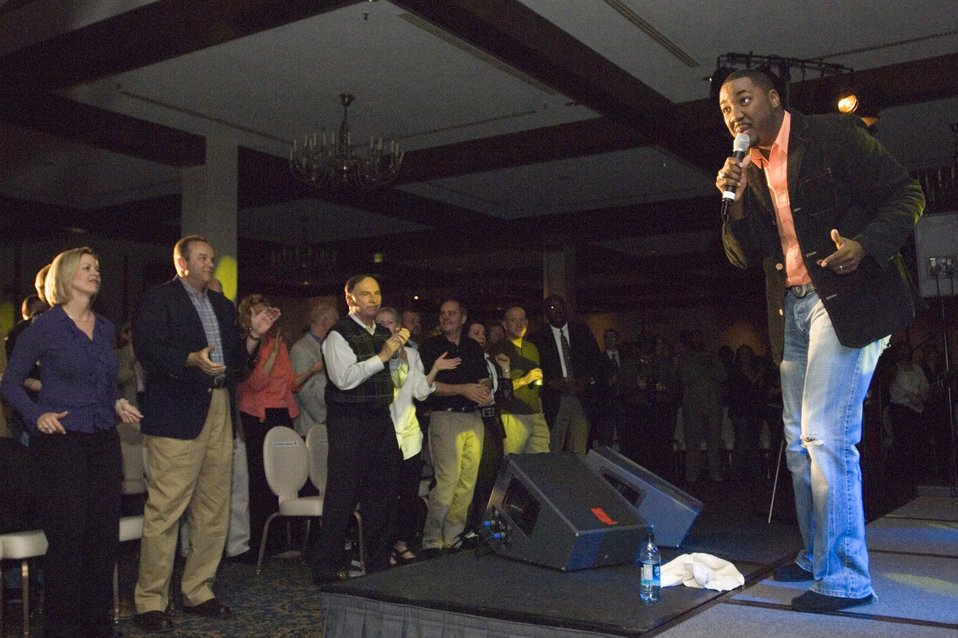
'USAFE Idol'

George Huff sings during United States Air Forces in Europe's